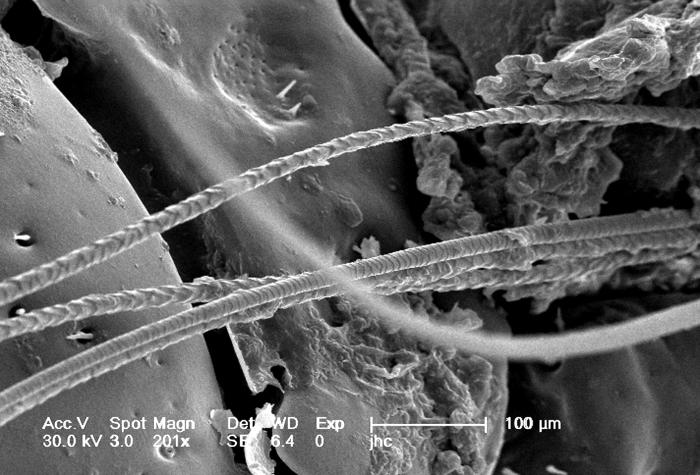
Under a magnification of 201X, this scanning electron micrographic (SEM) image depicted a dorsal view of an unidentified engorged female tick, which had been extracted from the skin of a pet cat while in the process of obtaining its blood meal. Note the presence of some of the cat's fur, along with some of its skin tissue in which the tick's gnathosoma were still embedded. See PHIL 9972 and 9973 for additional, less magnified views of this scenario. It is from the 'basis capituli' that the two spread 'pedipalps', and hidden skin-piercing hypostome and 'chelicerae' emanate. On the dorsal surface of the basis capituli you'll see two depressed areas known as the 'porose areas', through which secretions produced by dermal glands are released.